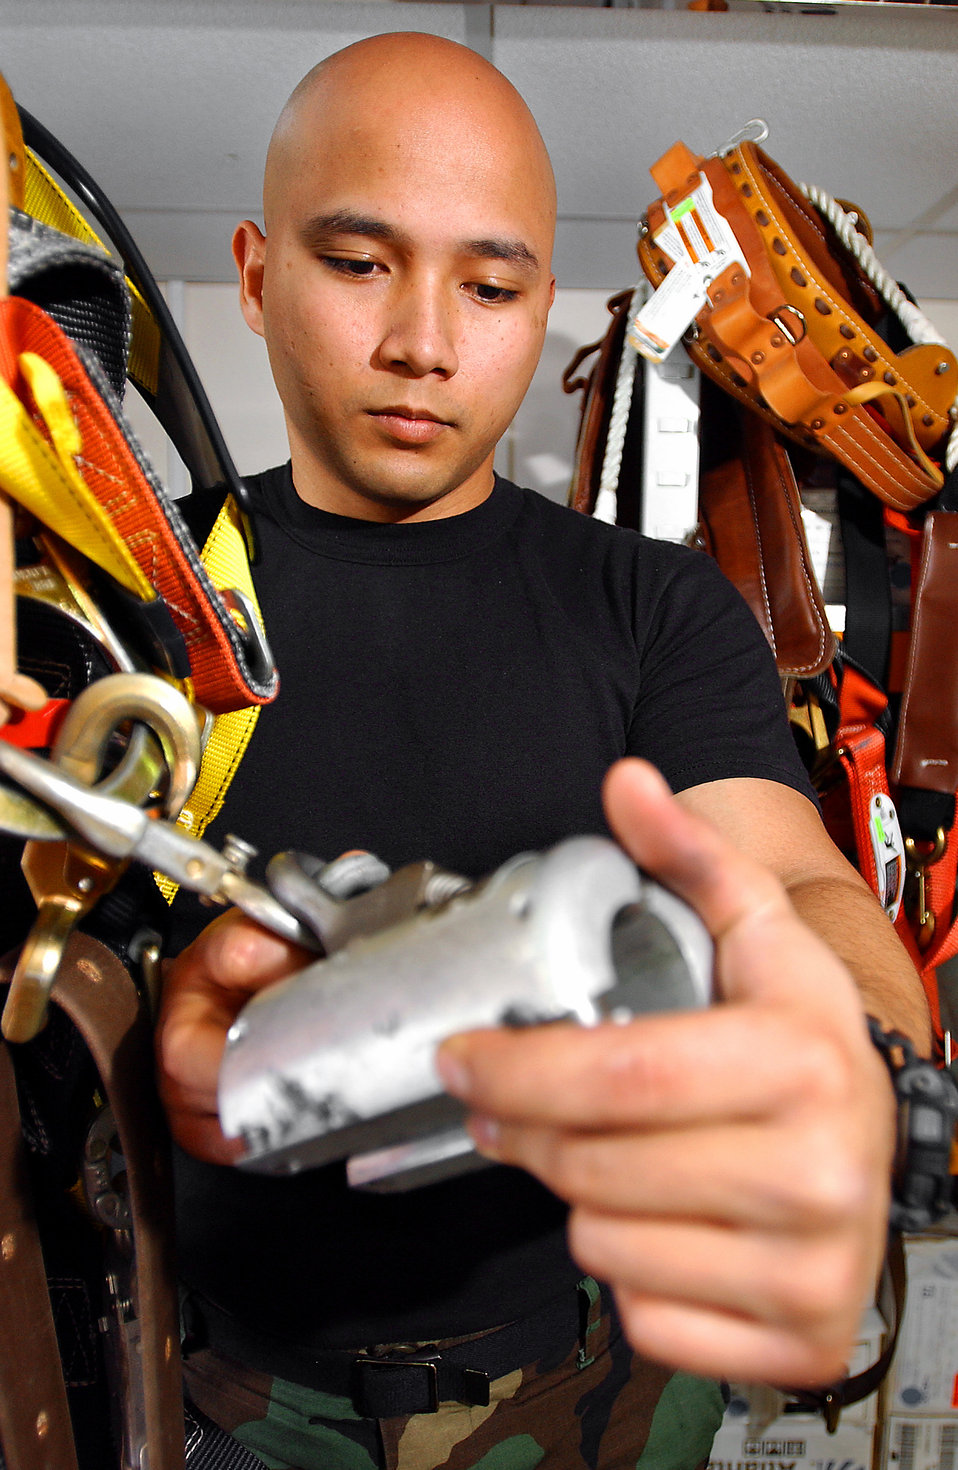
Locked in place

ROYAL AIR FORCE FAIRFORD, England -- Senior Airman Chuck Cruz inspects a lock sleeve on a safety harness here May 4. The sleeve holds Airmen secure while they climb towers for maintenance repairs. Airman Cruz is assigned to the 100th Communications Squadron at Royal Air Force Mildenhall.